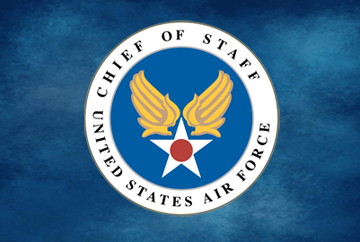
AF chief of staff